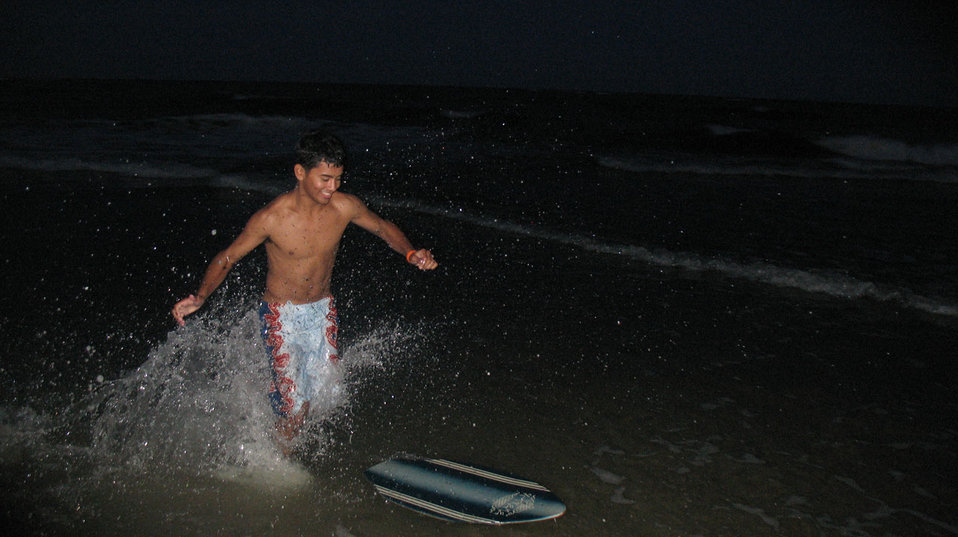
Cute teenager - boy surfing the ocean.